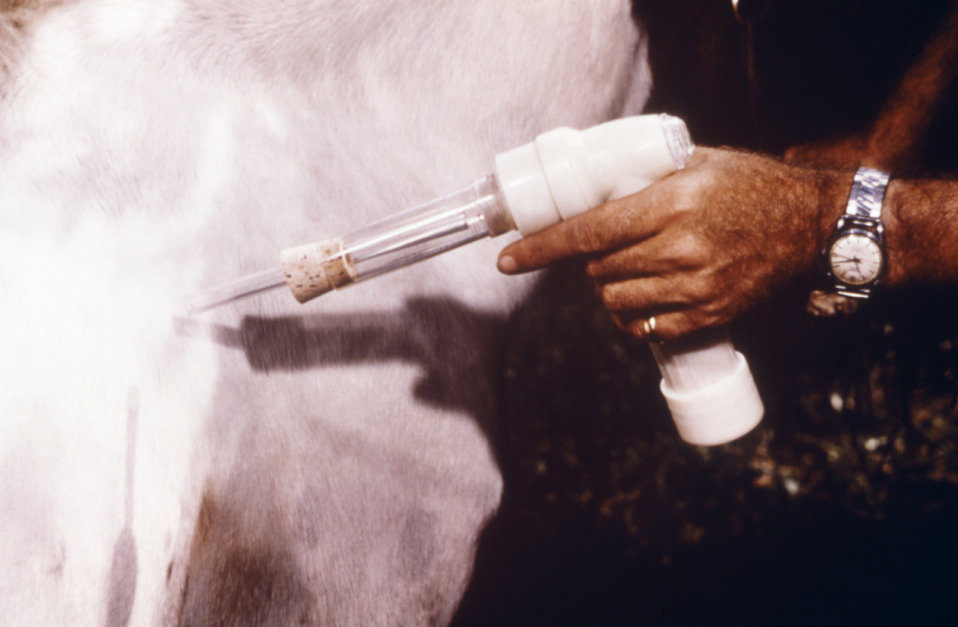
This CDC field researcher is collecting mosquitoes on the side of a horse, using a mechanical hand-held aspirator.